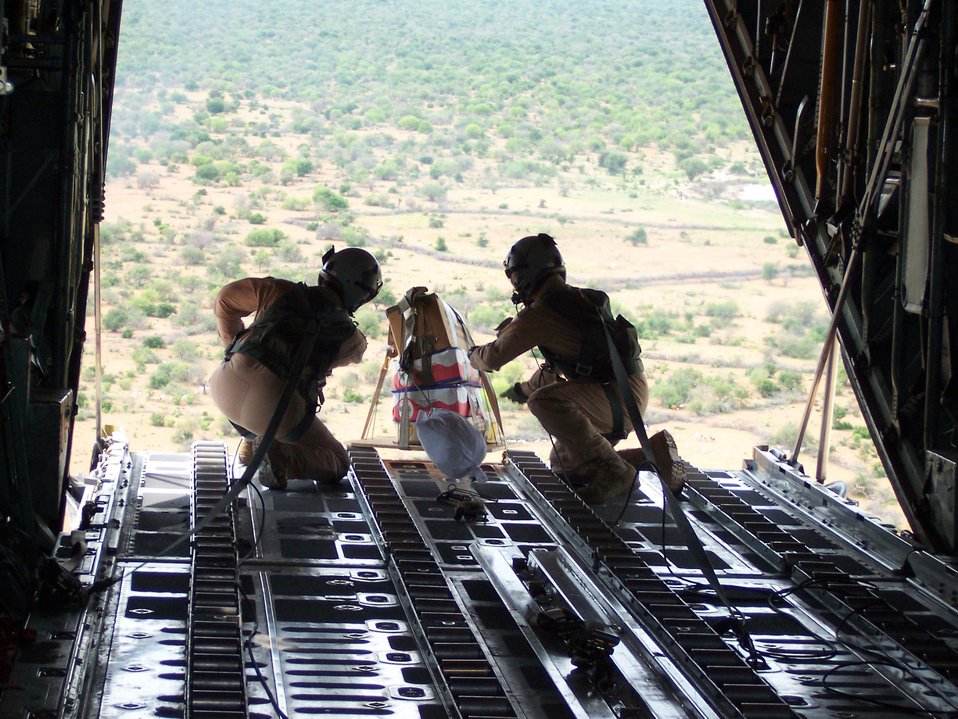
Airmen wrap up airdrop campaign

Staff Sgt. Patrick Delselva (left) and Senior Airman Chris Elder roll a miniature pallet of candy off the cargo ramp of a C-130 Hercules Dec. 14 to children in the Dadaab region of northeastern Kenya. In a six-day span the Air Force delivered more than 211,000 pounds of supplies to the region in support of Operation Unity Knight. Both Airmen are deployed to the 746th Expeditionary Airlift Wing in Southwest Asia from Dyess Air Force Base, Texas.